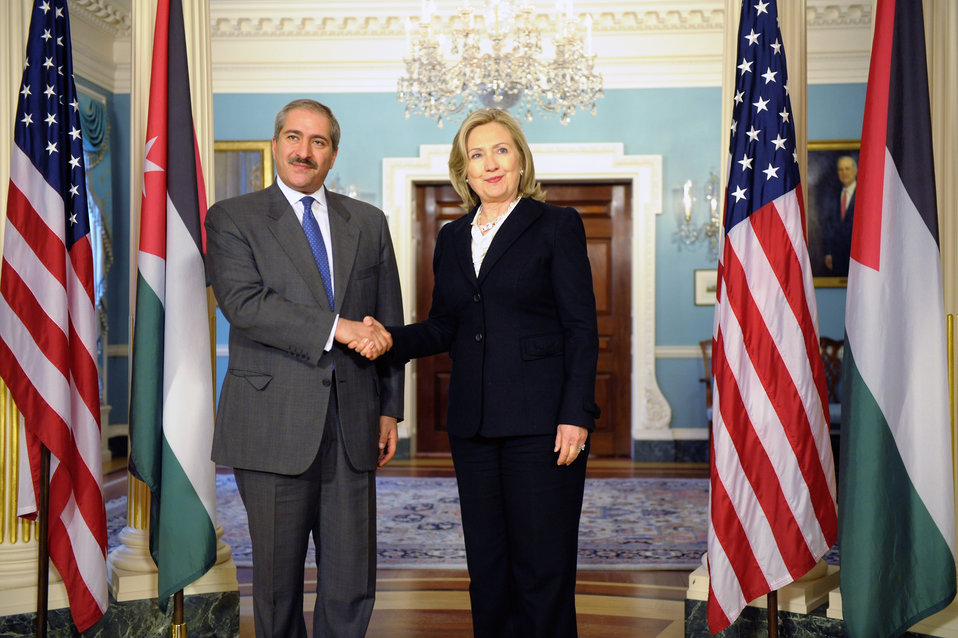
Secretary Clinton Shakes Hands With Jordanian Foreign Minister Judeh

U.S. Secretary of State Hillary Rodham Clinton shakes hands with Jordanian Foreign Minister Nasser Judeh after their bilateral meeting, at the U.S. Department of State in Washington, D.C., on April 12, 2011.